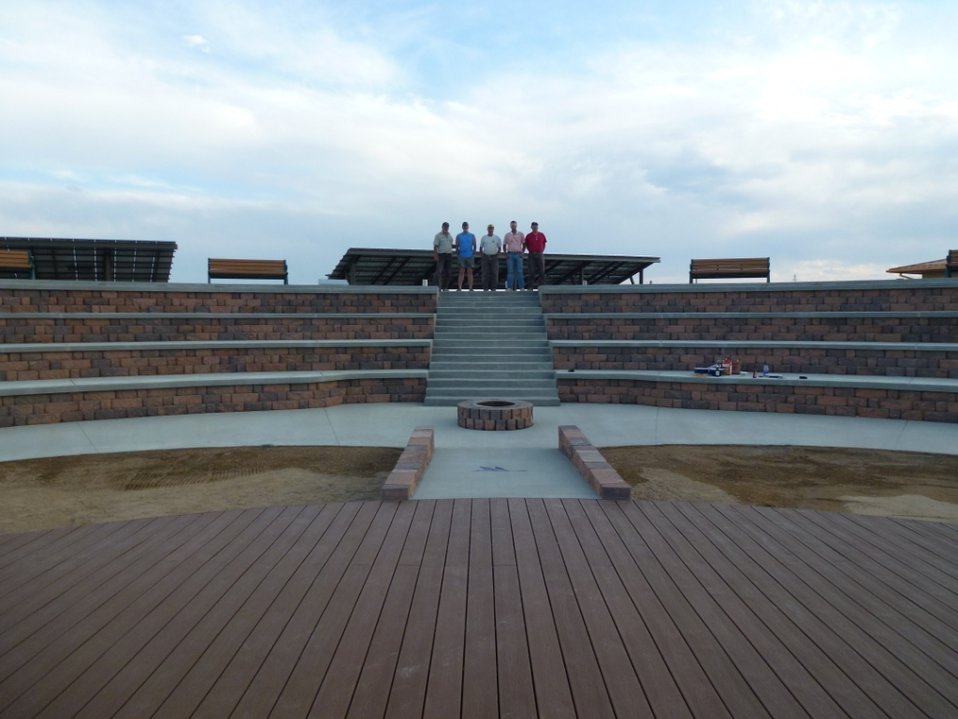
Refuge Maintenance Action Team

Thanks to the work of a Mountain-Prairie Region Refuge Maintenance Action Team (MAT), a new amphitheater was recently erected adjacent to the Rocky Mountain Arsenal National Wildlife Refuge’s visitor center in Commerce City, Colo.

The amphitheater is a fully accessible facility with seating for 175 to 200 spectators. It features a stage and fire pit for special programs. The addition of the amphitheater to the visitor center will enhance interpretive program delivery as part of the facility’s regular visitor services and will be used for special events. Commerce City has also expressed an interest in using the amphitheater for programs of its own.

The project was completed under budget and cost nearly half as much as the bids received from private contractors. According to rough estimates, the U.S. Fish & Wildlife Service saved approximately $70,000. The substantial cost savings was realized by employing the MAT, which is comprised of in-house maintenance workers with various skill sets from several stations across the region. Typically, deferred maintenance dollars pay for the project materials, labor, travel, room and board of MAT members. MAT projects usually take between one to five weeks to complete.

Construction began May 7, 2012 and concluded June 13, 2012 with a one-week pause in the middle of the project to allow MAT members a break. In total, the project took 34 12-hour-work days. The MAT worked more than 2,000 man hours on the project with no time lost due to injury or any safety-related issues.

The Refuge MAT consisted of:
• Rich Iwanski – Bear River Migratory Bird Refuge – Engineering Equipment Operator – Pre-construction organization, MAT team foreman, Equipment Operator and other general work.
• Cameron Fenrich – Mountain-Prairie Regional Office – Civil Engineer – Project Manager, Project Engineer, amphitheater design, on-site inspections, general construction work and overall construction and MAT team organization.
• Steve Raney – Baca National Wildlife Refuge – Maintenance Worker - Equipment Operator and other general work.
• Justin Wanzek – Valley City Wetland Management District – Maintenance Worker- Equipment Operator and other general work.
• Delbert “Skip” Palmer – Lee Metcalf National Wildlife Refuge – Maintenance Worker - Concrete Specialist and other general work.
• Tom Ronning – Rocky Mountain Arsenal National Wildlife Refuge – Range Conservationist - Truck Driver and other general work.